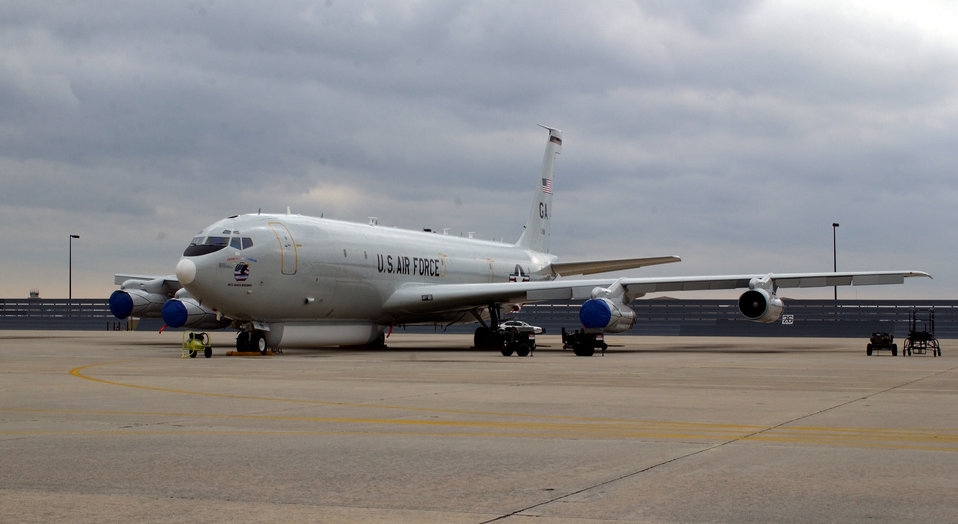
Final Joint STARS aircraft delivered

ROBINS AIR FORCE BASE, Ga. -- Officials of the 116th Air Control Wing here received the 17th and final E-8C Joint Surveillance Target Attack Radar System aircraft March 23. The wing is the only unit to fly the aircraft. The Joint STARS aircraft is the world's most advanced wide-area airborne ground surveillance, targeting and battle management system.